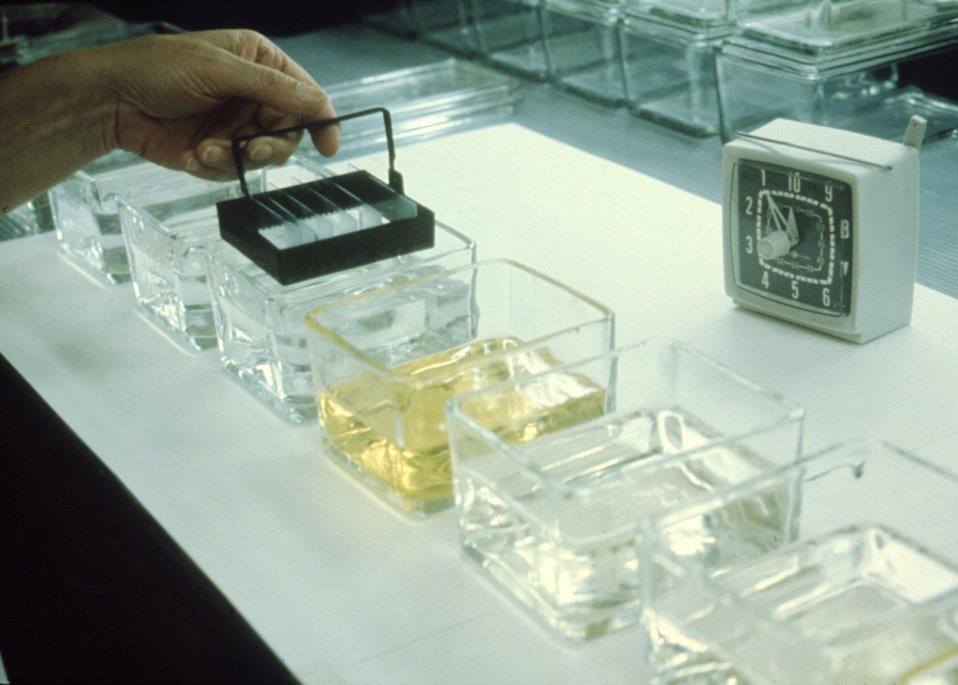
This laboratorian is demonstrating the characteristics of Legionnaires' disease within tissue.